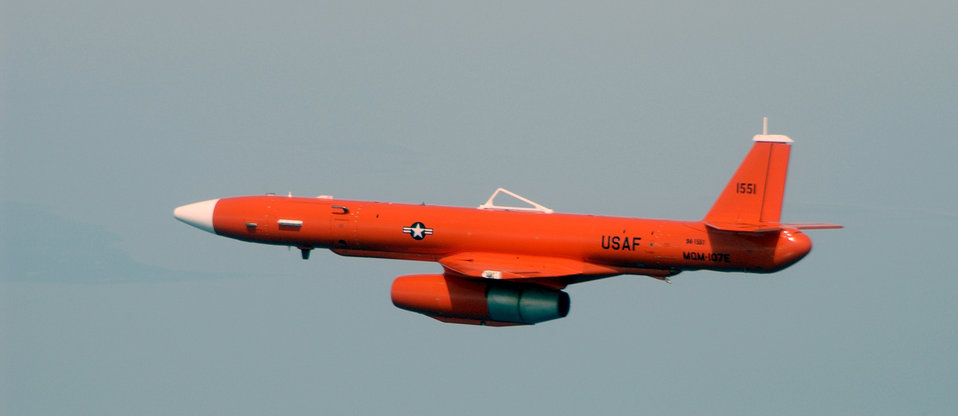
Everybody's gunning for me

OVER TYNDALL AIR FORCE BASE, Fla. -- An MQM-107E Streaker sub-scale aerial target drone flies through the sky here April 20 during a Combat Archer exercise. MQM-107E sub-scale aerial target drones are assigned to the 82nd Aerial Targets Squadron here and are used as targets during Combat Archer missions.